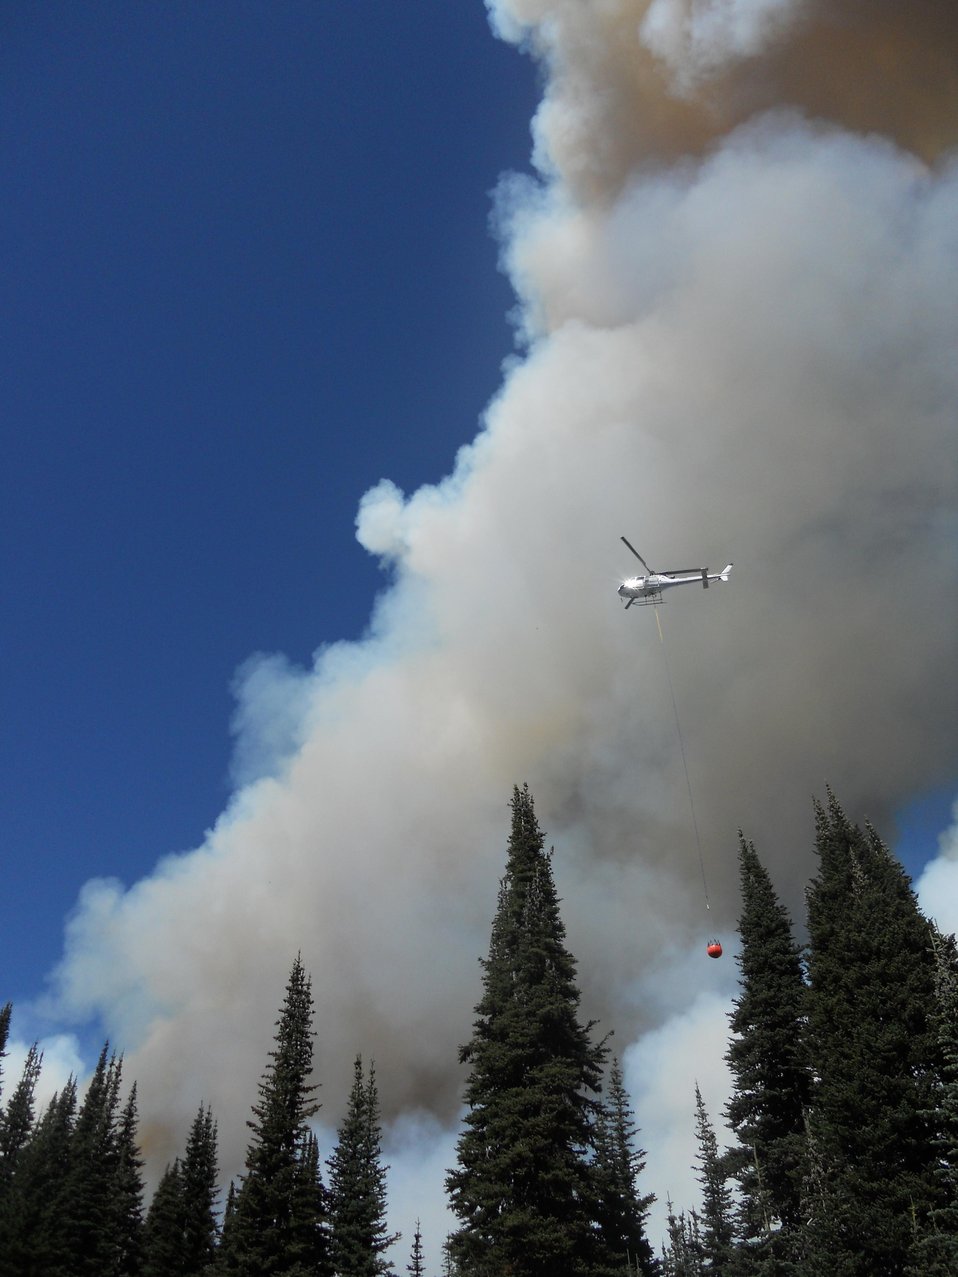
The Manastash Ridge Fire in the Wenatchee National Forest near in Cle Elum, WA began on Aug. 9, 2013 began by lightning has consumed approximately 2,352 acres and is 40% contained.